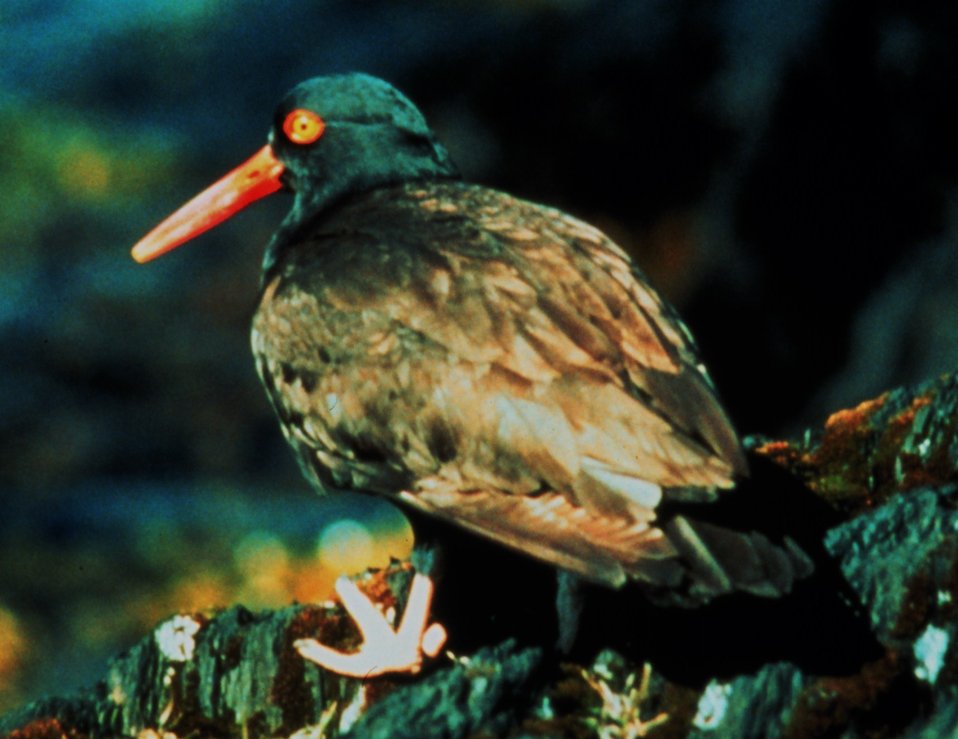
Black oystercatcher